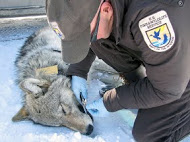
Gray wolf

Scientific name: Canis lupus
Status: Endangered Non-Essential Experimental Population Delisted
Photo credit: Lori Iverson USFWS
Refuge Biologist Eric Cole removes a whisker from a male yearling